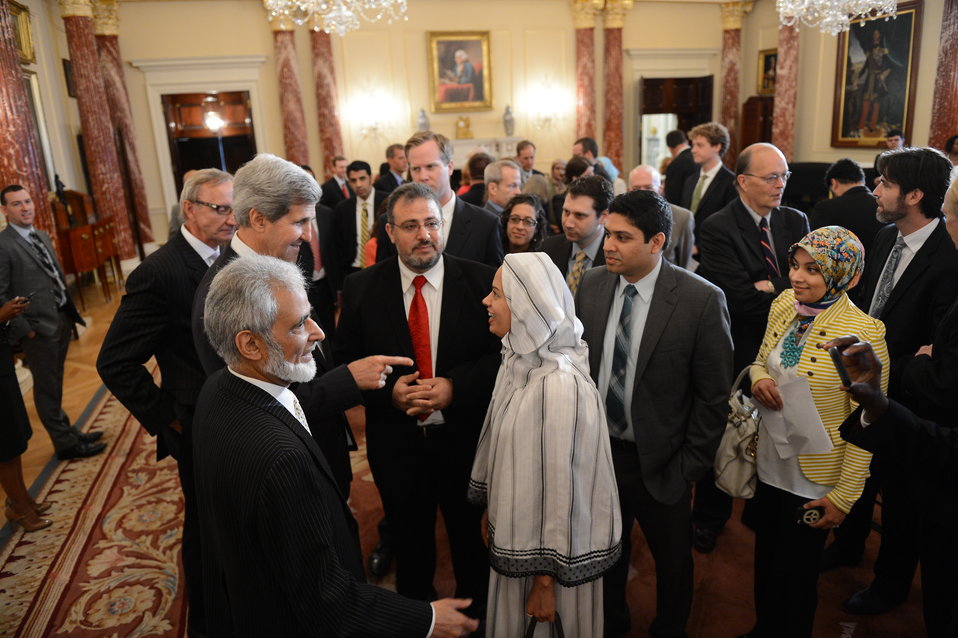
Secretary Kerry Engages With Faith-Based Leaders

U.S. Secretary of State John Kerry speaks with faith-based leaders after delivering remarks at the launch of the Office for Engagement With Faith-Based Communities at the U.S. Department of State in Washington, D.C., on August 7, 2013.